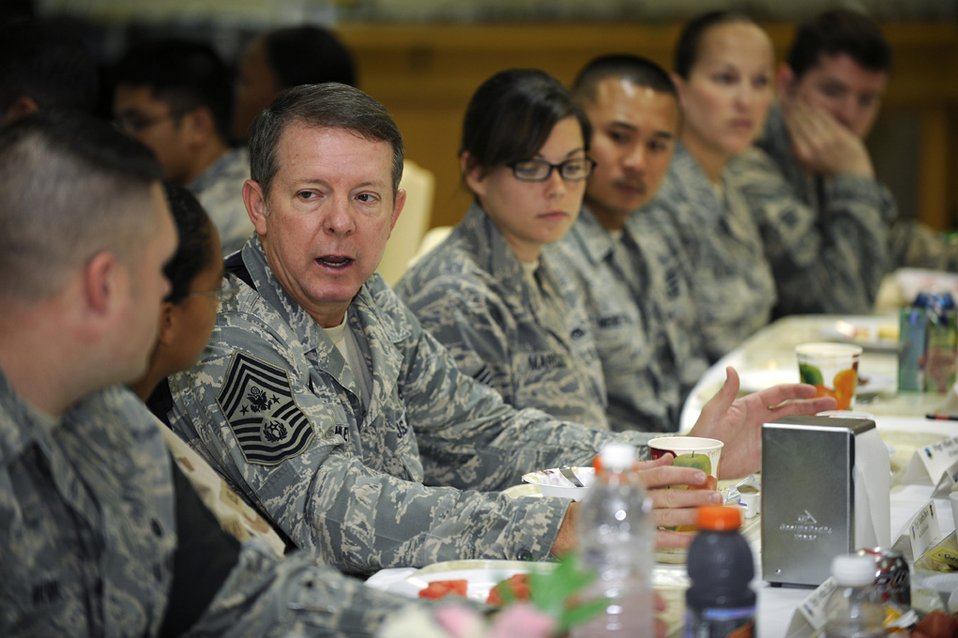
Chief of staff wraps up Middle East tour at Joint Base Balad

Chief Master Sgt. of the Air Force Rodney McKinley meets with servicemembers during breakfast at Joint Base Balad, Iraq, Oct. 25. Chief McKinley and Air Force Chief of Staff Gen. Norton Schwartz visited eight installations in the U.S. Central Command area of responsibility and the Horn of Africa.